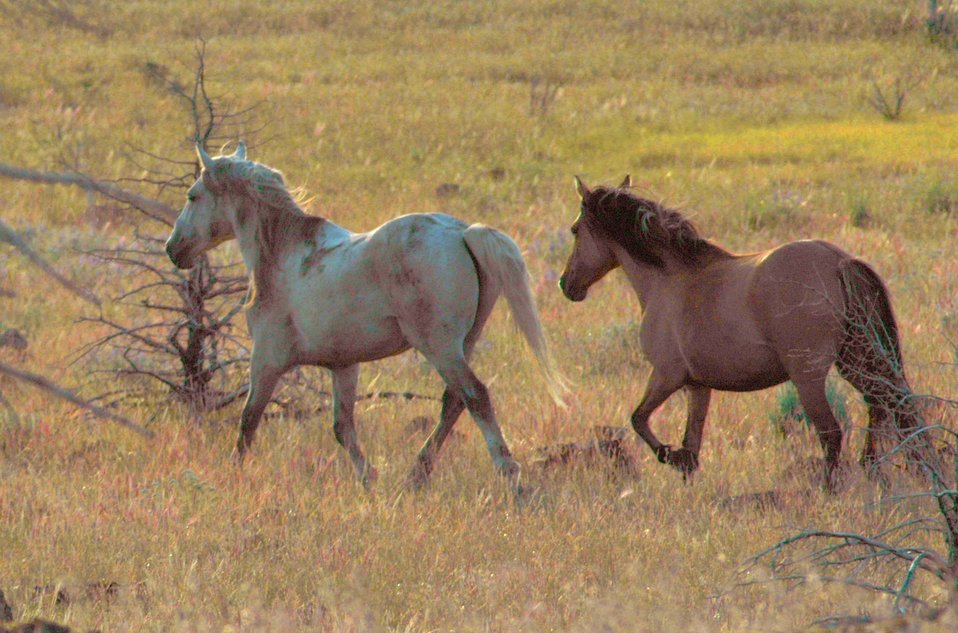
Kiger horses roam the plateaus of the Kiger Wildhorse Herd Management Area near Steens Mountain in Southeastern Oregon.